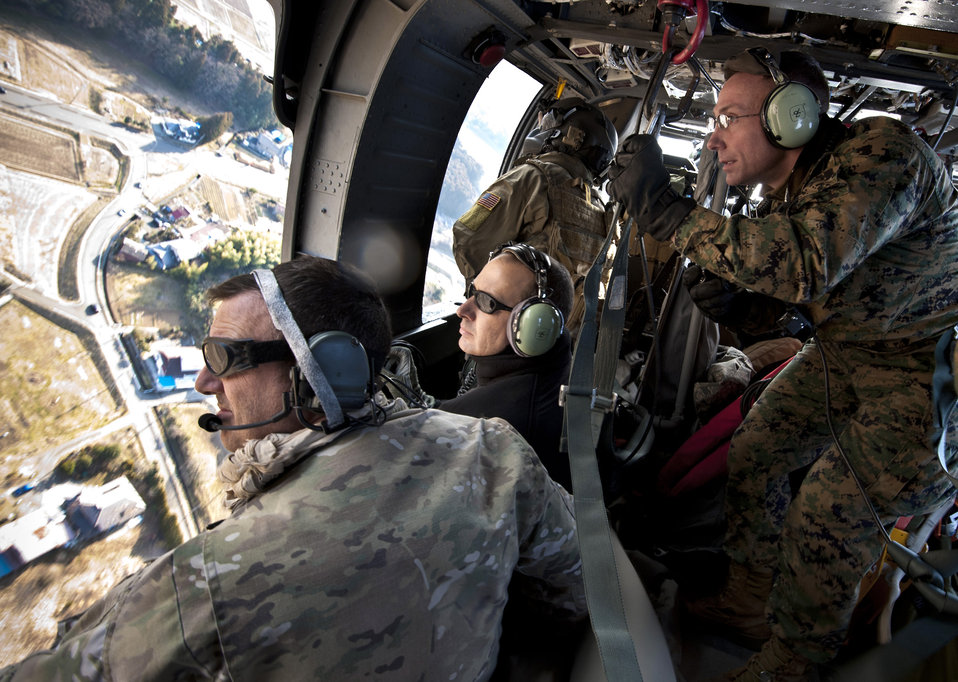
Japan's aftermath

A joint team of Airmen and Marines fly over the Sendai Airport, Japan, March 13, 2011, to survey the aftermath of the 8.9-magnitude earthquake and subsequent tsunami that struck the region. The service members are search and rescue professionals assisting with Japan's earthquake and tsunami recovery effort.